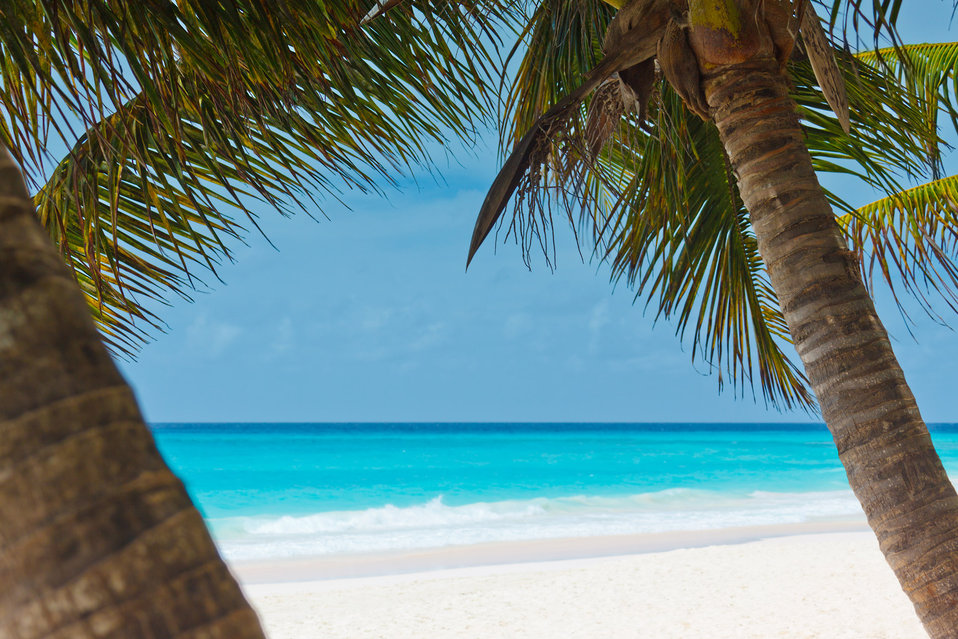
Palm trees and beach

Palm trees with beautiful beach and sea.